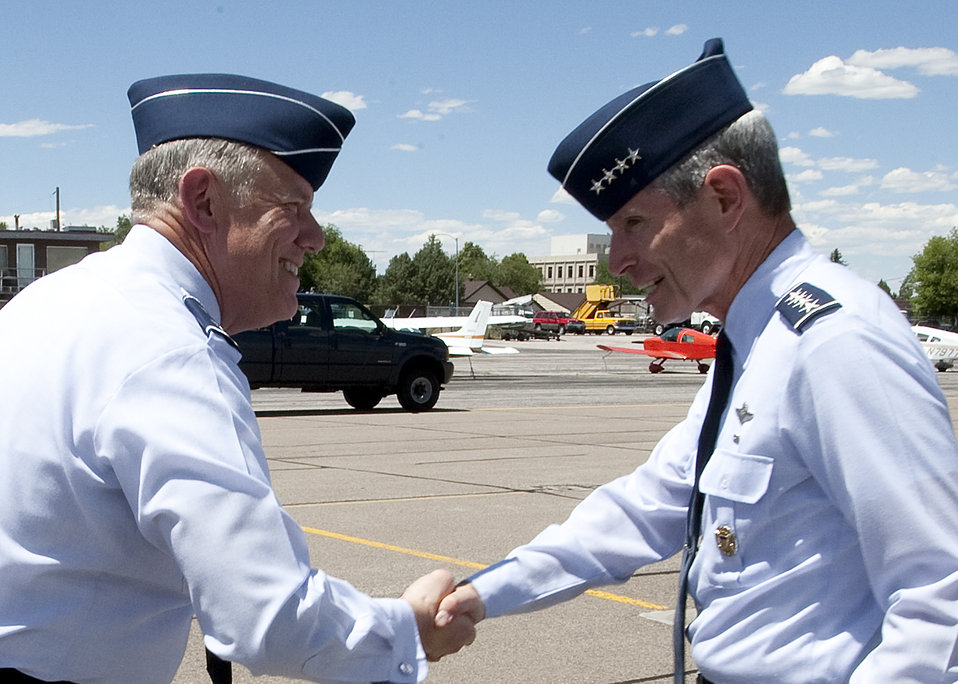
Air Force chief of staff visits Cheyenne

Air Force Chief of Staff Gen. Norton Schwartz greets Maj. Gen. C. Donald Alston July 22, 2011, after arriving at Cheyenne Regional Airport, Wyo. Alston is the 20th Air Force commander.